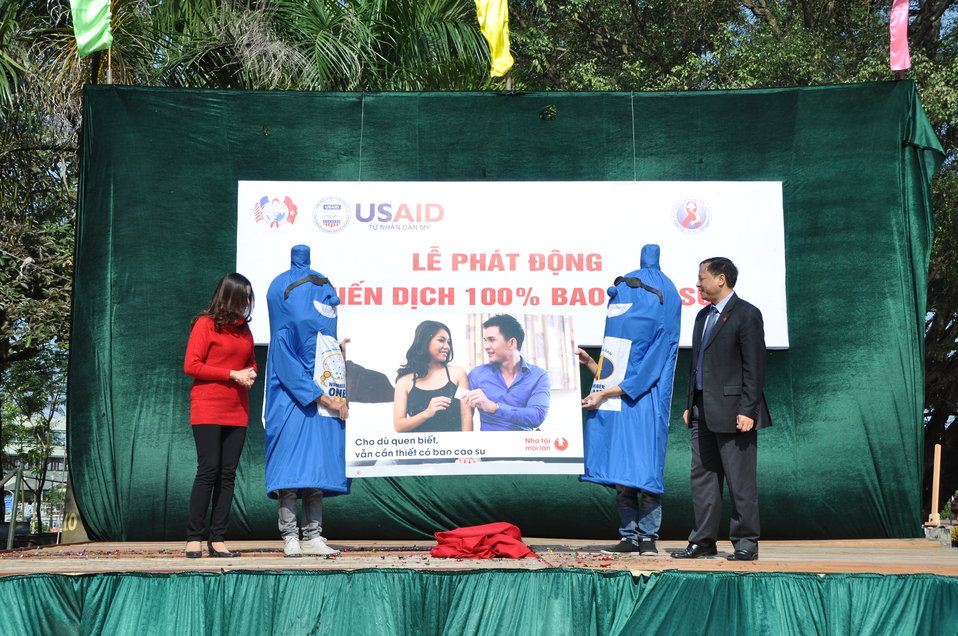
100% Condom Use Campaign Launch, Dec. 2, 2011